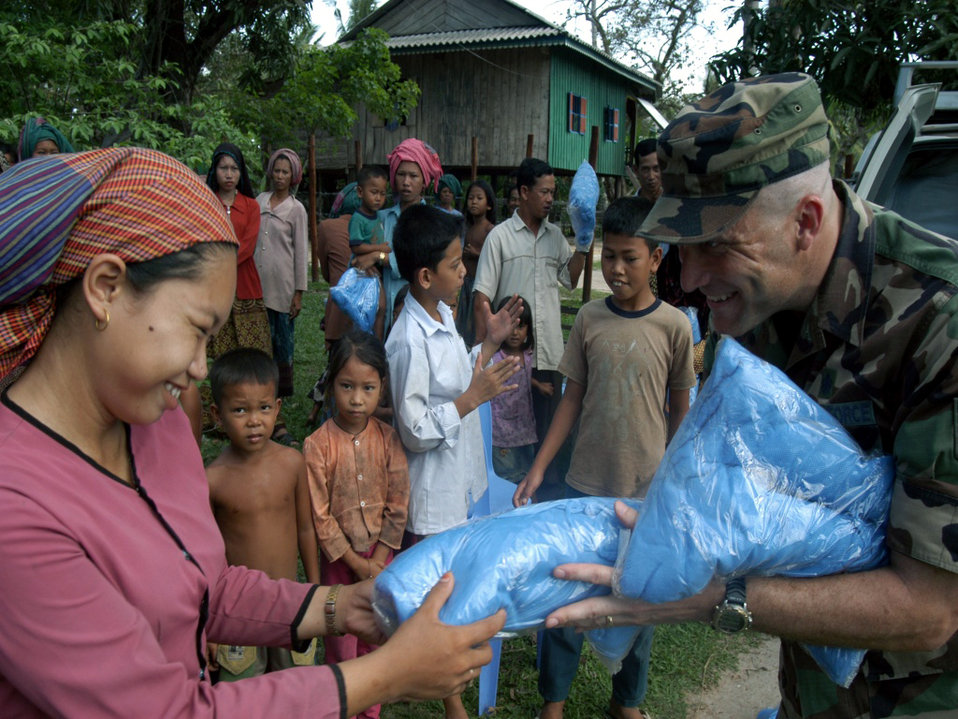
Gift of health

KEP, Cambodia -- Tech. Sgt. Bryan Gray hands out mosquito nets to a Cham-Muslim woman in a village near here May 20. He is part of a 20-person blast resuscitation and victim assistance team on a two-week humanitarian mission. Members of the team are passing out 1,000 mosquito nets to cut down on malaria. Sergeant Gray is a biomedical equipment repair technician with the 18th Medical Support Squadron at Kadena Air Base, Japan.